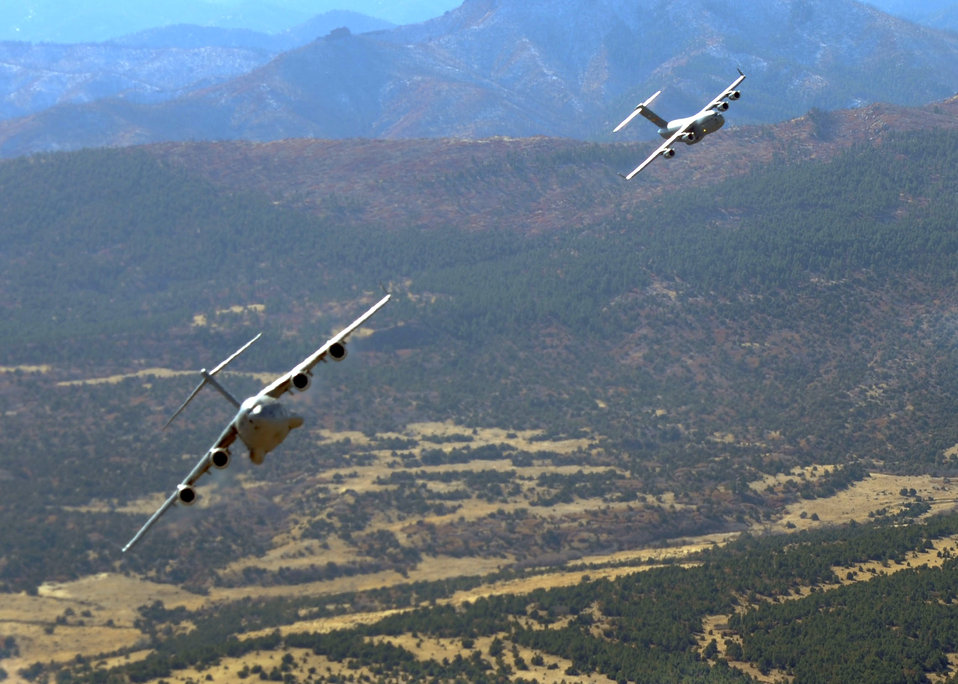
Altus C-17s fly during MAFEX mission PB

Two C-17 Globemaster IIIs move into formation during a Mobility Air Force Exercise Nov. 17, 2010, near Nellis Air Force Base, Nev. The MAFEX is a biannual, Air Force-wide training opportunity hosted by the Air Force Weapons School there.